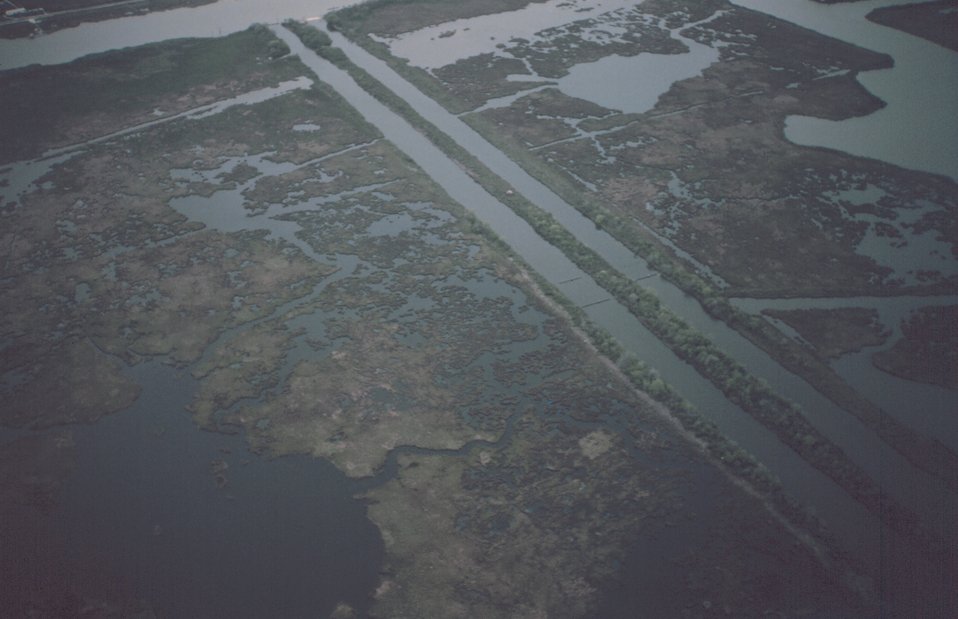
Subsiding marsh and man-made canals south of New Orleans. Canals can disrupt water circulation in marsh systems.